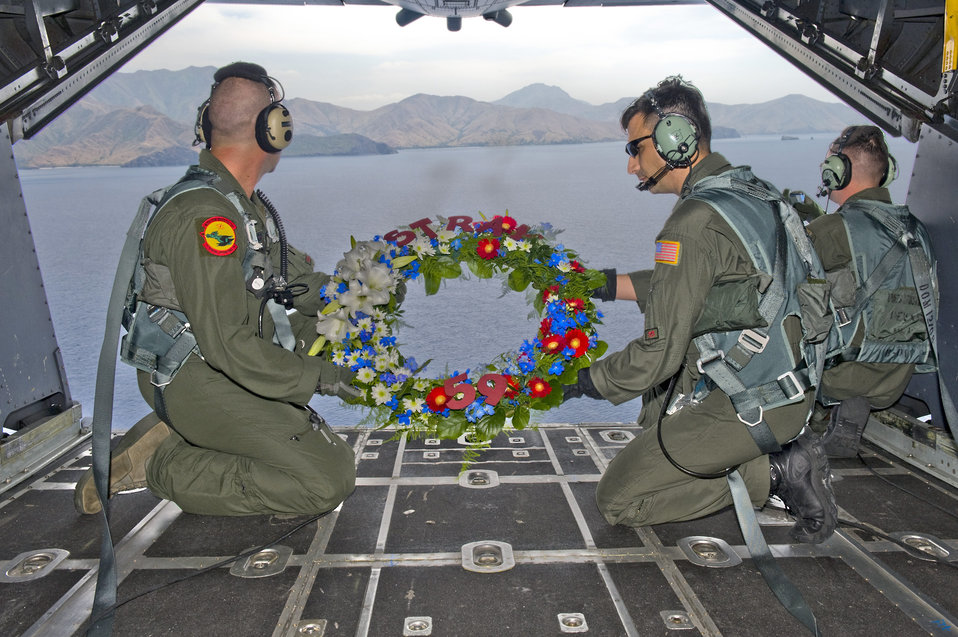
Squadron marks 30 years of honoring fallen comrades

Loadmasters assigned to the 1st Special Operations Squadron prepare to release a wreath from an MC-130H Combat Talon II Feb. 26, 2011, in memory of fallen brethren lost 30 years ago, when a 1st SOS MC-130E, call sign STRAY 59, crashed during an exercise, killing eight crewmembers and 15 passengers.